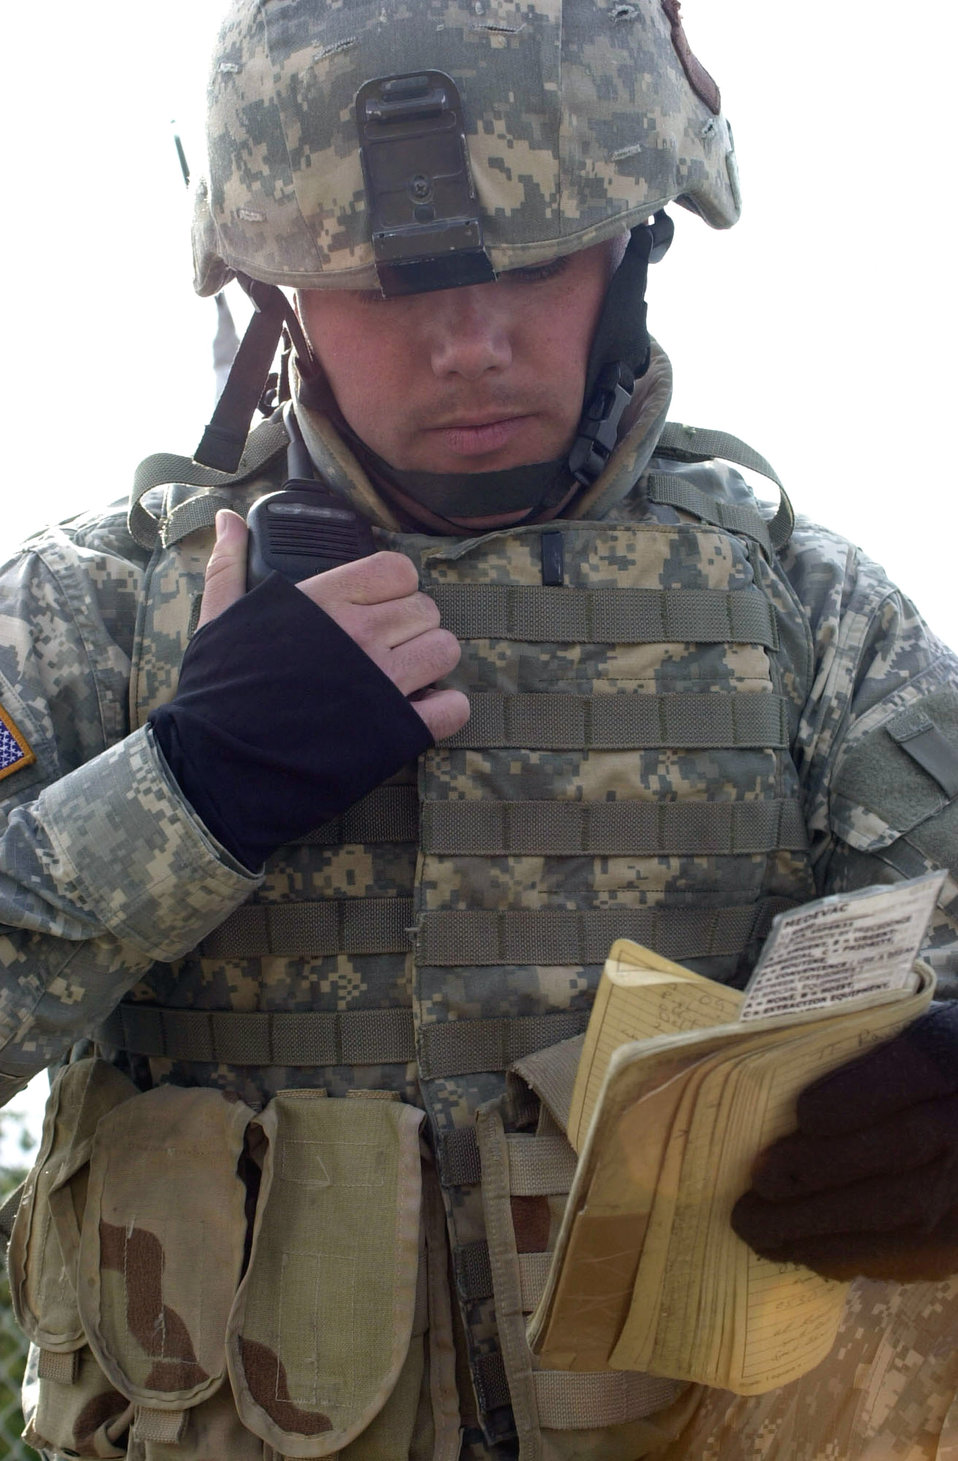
Emergency response system being tested

An Army National Guardsmen from Nebraska radios in for support after his unit detained a suspected terrorist during an Alaska Shield/Northern Edge 07 scenario May 9 at Fairbanks, Alaska. His radio is networked to the communications systems of other participating local, state, federal and private agencies due to an initiative called the Incident Command System. This cross-agency system improves coordinated response to emergencies such as natural disasters or terrorist attacks.